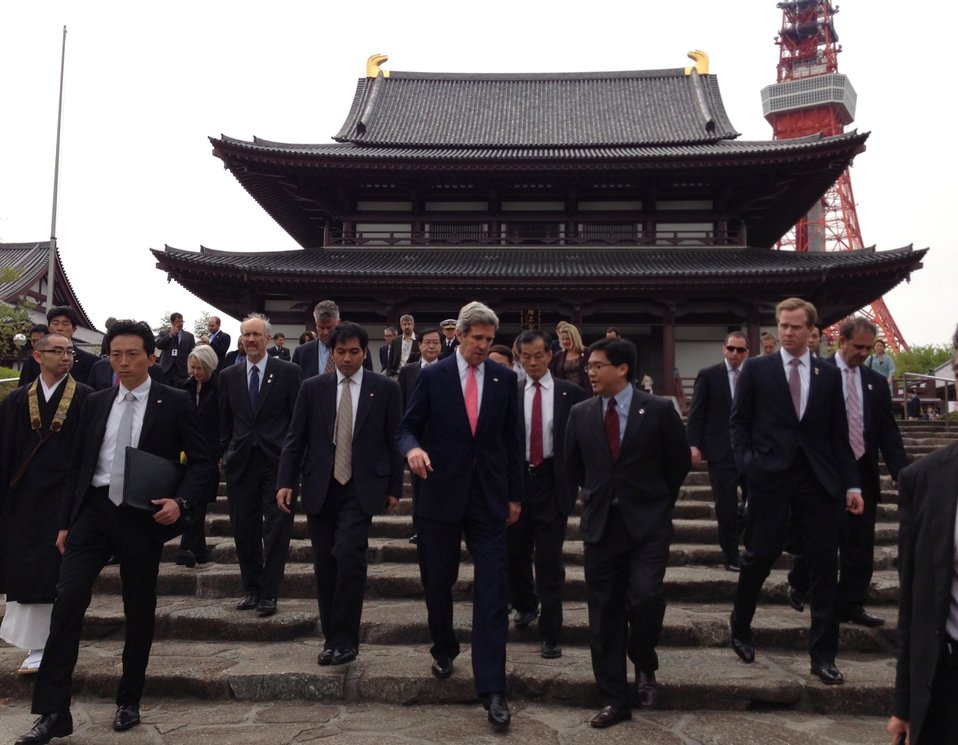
Secretary Kerry Walks Down Steps of Zojoji Shrine

U.S. Secretary of State John Kerry walks down the steps of the Zojoji Shrine in Tokyo, Japan, on April 14, 2013.